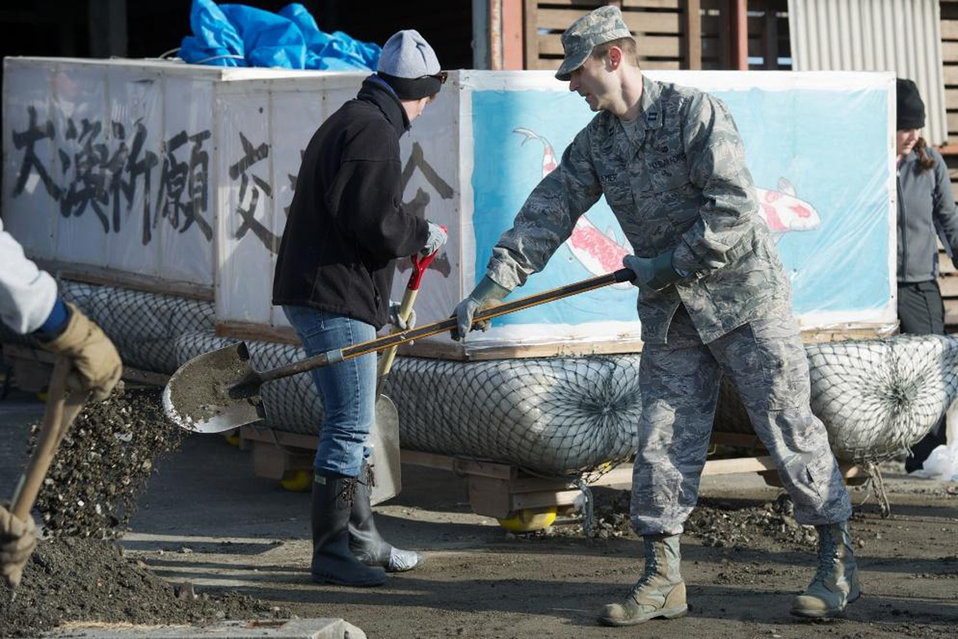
Misawa Air Base Personnel and Family Members help Tsunami-Battered Japanese City

U.S. Air Force Capt. Jacob Ramer, from Tulsa, Okla., assigned to the Air Defense Council on Misawa Air Base, along with other base volunteers, shovel sand off the road during a local cleanup effort. More than 50 volunteers from Misawa Air Base assisted with the cleanup here following the 9.0-magnitude earthquake that triggered a devastating tsunami on Japan's eastern coastline.